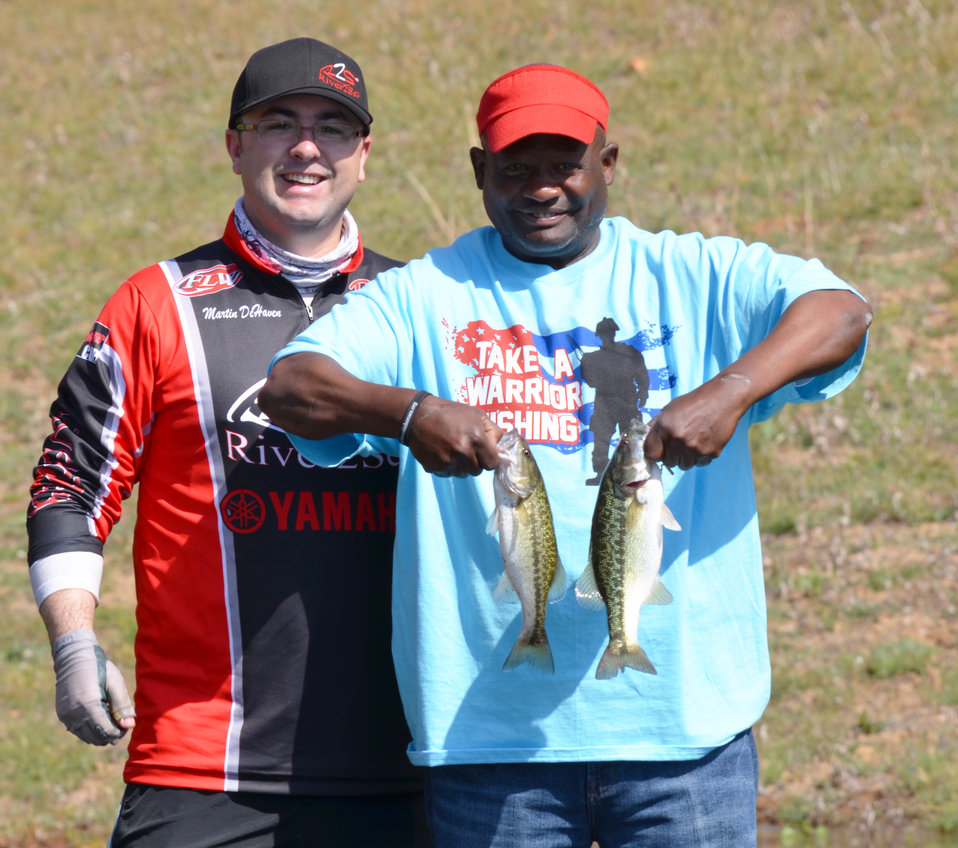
Take a Warrior Fishing 2014 at Pine Flat Lake

A volunteer boat captain and his newest fishing buddy display their catch. Pine Flat Lake, the U.S. Army Corps of Engineers Sacramento District park near Piedra, Calif., hosted Take a Warrior Fishing on May 3, 2014. The recreational event sponsored by Central Valley Veterans and their corporate donors, plus bright sunshine and good fishing, attracted 68 veterans and their families. A team of over 100 volunteers made sure veterans and their families enjoyed a day of fishing, fun and food. Photo cropped for emphasis.